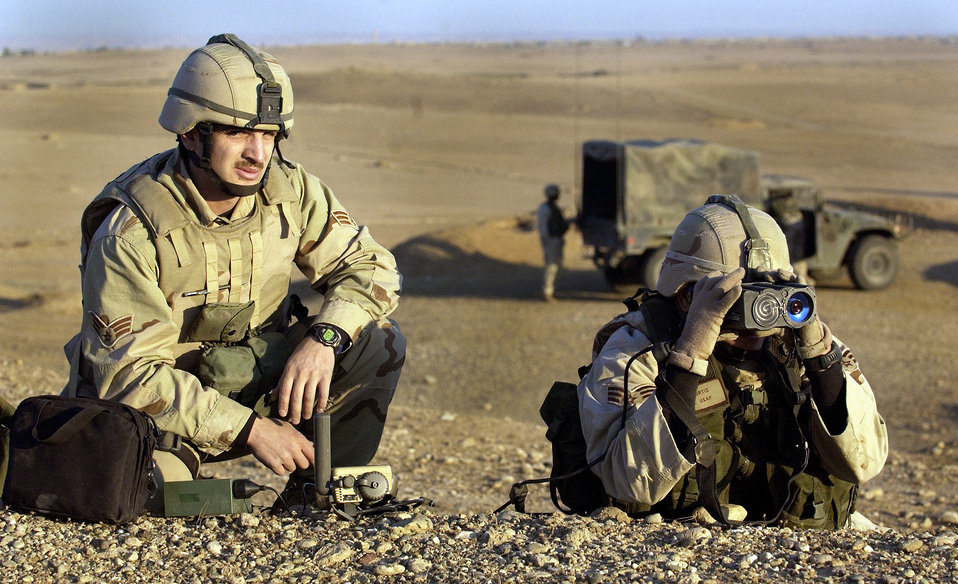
It's target time

KIRKUK, Iraq -- Senior Airman Leo Ortiz eyes a target on the horizon here Nov. 21 as Senior Airman Josh Gianni observes. They are part of Operation Ivy Cyclone, an operation designed to root out and crush insurgents in Iraq. The airmen are assigned to the 4th Air Support Group's tactical air control party, Detachment 1.